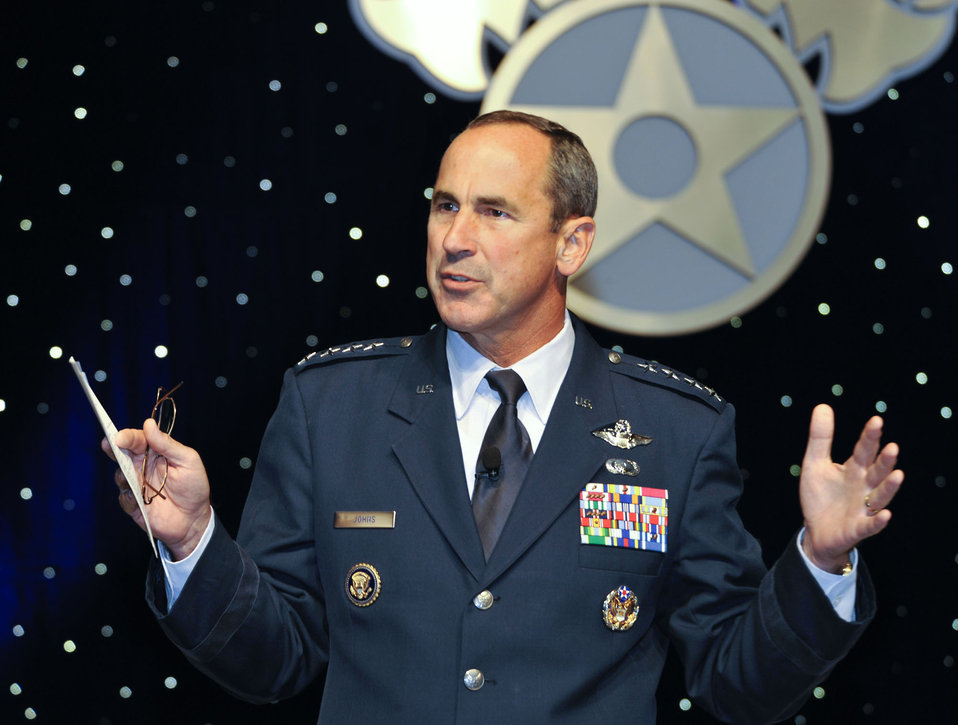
AMC commander relates importance of global reach to AFA attendees

Gen. Raymond Johns, commander of Air Mobility Command, discusses recent mission requirements affecting his command resources with audience members at the Air Force Association annual Air and Space Conference and Technology Exposition Sept. 14, 2010, at National Harbor in Oxon Hill, Md.